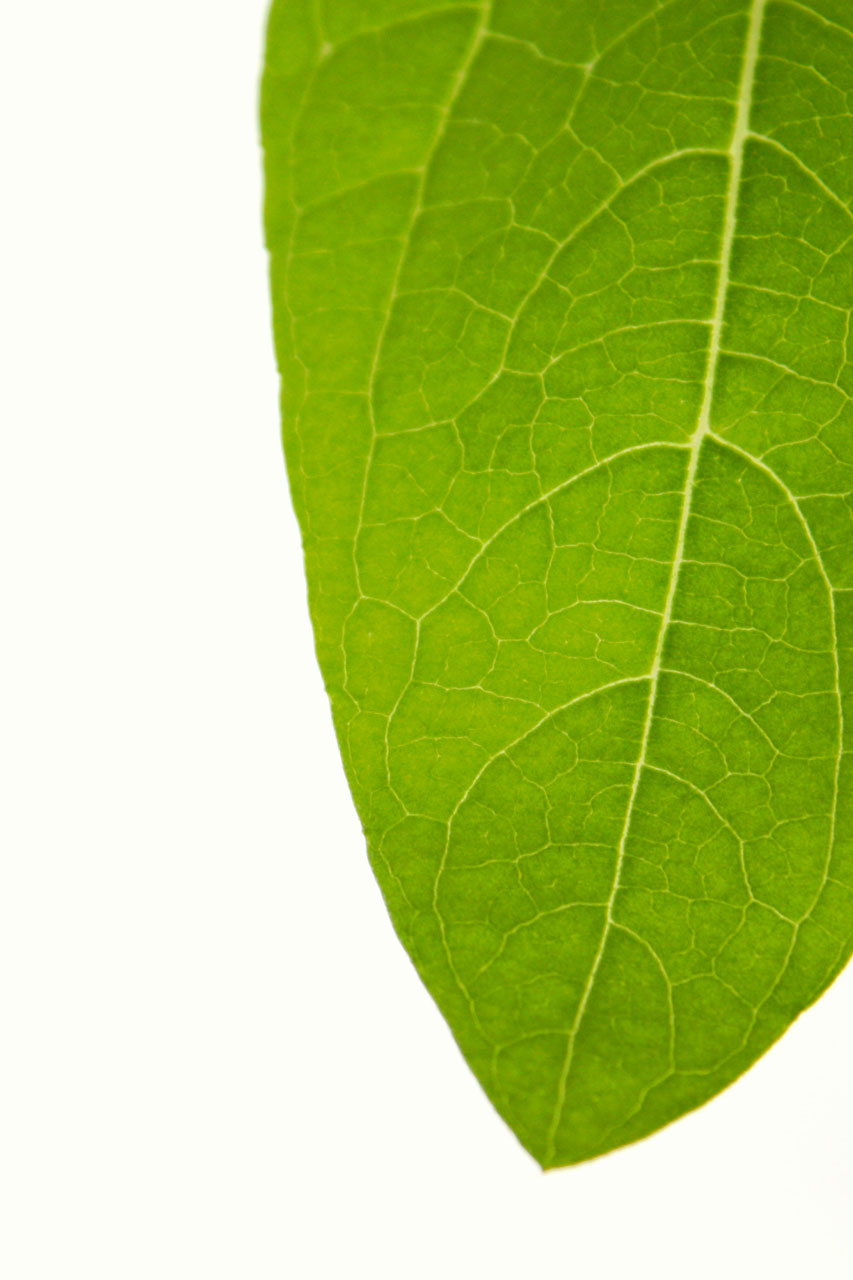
Leaf - white background.